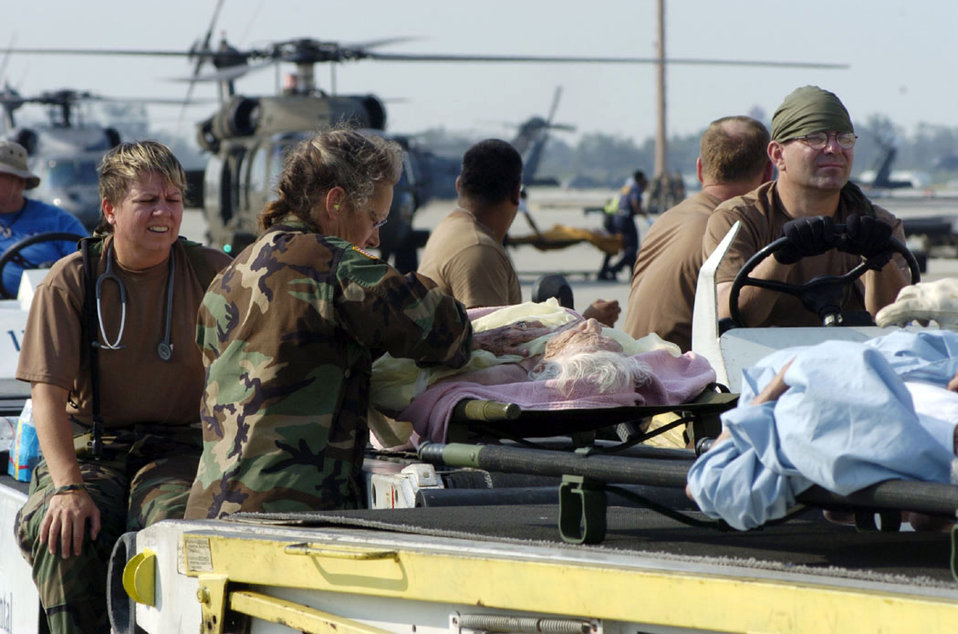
Air Force evacuates the sick and wounded

NEW ORLEANS -- Air Force medics battle the heat and humidity to treat patients being evacuated here Sept. 2.